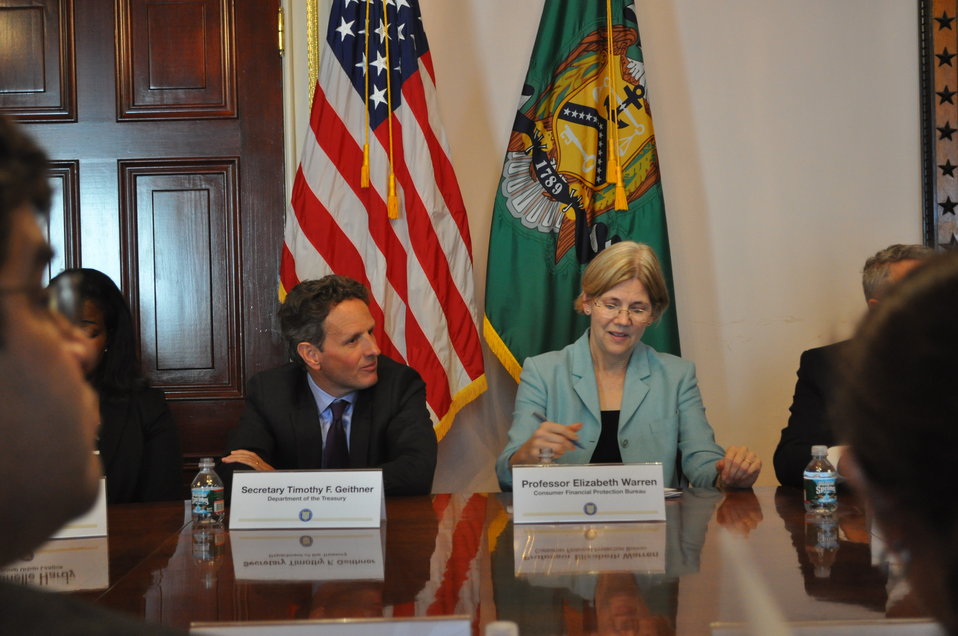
Mortgage Disclosure Forum, 09/21/10

On Tuesday afternoon, Secretary Geithner and Professor Elizabeth Warren hosted a mortgage disclosure forum at Treasury. With the improvement of disclosures for mortgages and other financial products a top priority for the new Consumer Financial Protection Bureau (CFPB), the forum brought together a broad range of stakeholders and experts to provide input on the simplification of mortgage disclosure forms so that consumers have the clear and easy-to-understand information they need to make the financial choices that are best for themselves and their families.